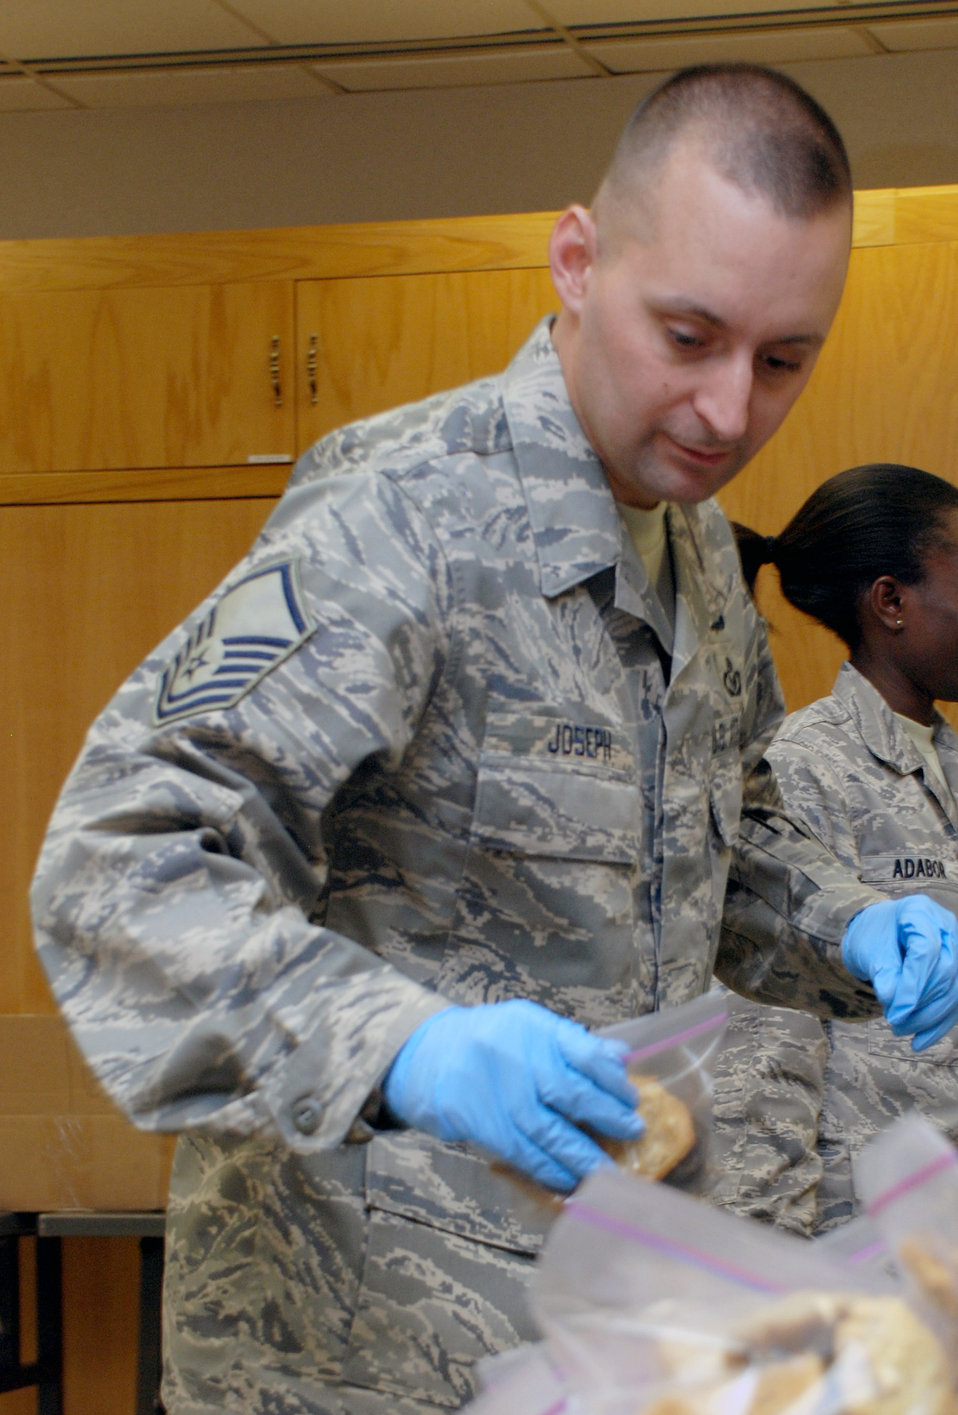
Bakers, baggers deliver sweet treats to dormitory Airmen

Master Sgt. Michael Joseph bags cookies for dormitory Airmen in support of the Cookies for the Troops drive Dec. 16 at Peterson Air Force Base, Colo. More than 6,600 cookies were donated by Peterson and Schriever AFB military and family members for nearly 400 Airmen living in the dormitories. Sergeant Joseph is the 21st Force Support Squadron superintendent.